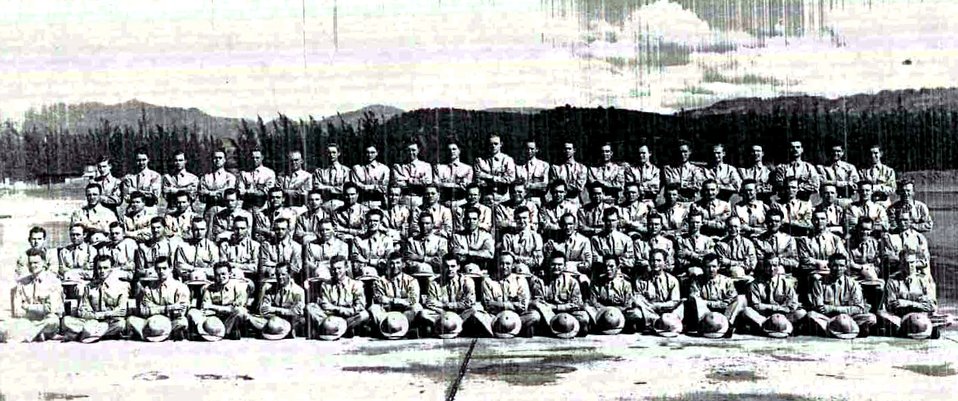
394th Bombardment Squadron

Airmen from the 394th Bombardment Squadron gather for a group photo during World War II at an unknown location. The 394th BS was the training unit for all incoming B-17 Flying Fortress crews and was stationed throughout the Pacific theater.